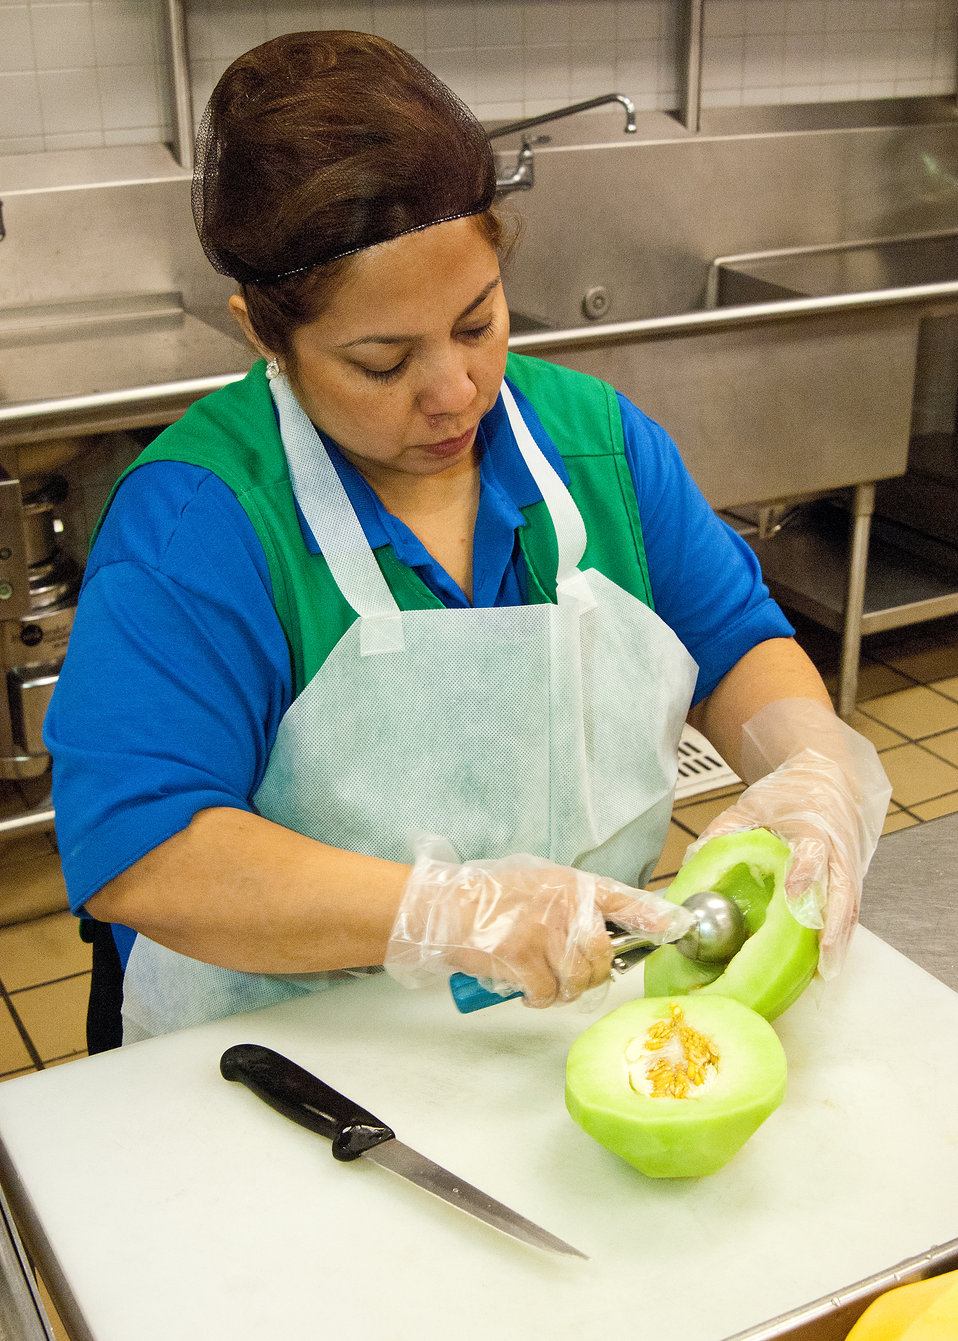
Magaly Valentin, Arlington Food Services prepares honeydew melon for fruit salads in the kitchen at Washington-Lee High School in Arlington, Virginia, on Wednesday, October 25, 2011. The National School Lunch Program is a federally assisted meal program administered by the United States Department of Agriculture, Food and Nutrition Service operating in public, nonprofit private schools and residential child care institutions. It provides nutritionally balanced, low-cost or free lunches to children each school day.